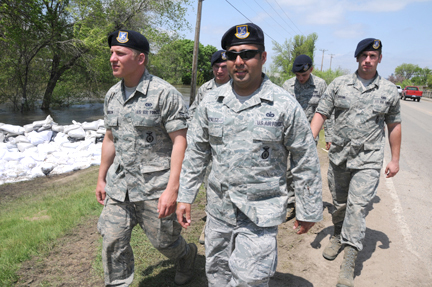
Guard provides presence patrols in Minot's evacuated areas

Master Sgt. Frank Gonzalez leads a team on a presence patrol mission June 2, 2011, throughout a low-lying area of Minot, N.D. To his left is Airman 1st Class Cody Jenson and, to the right, Airman 1st Class Alex Sprunk. North Dakota Guardsmen are spread throughout the evacuated areas of Minot in two- to six-person teams to guard against theft or vandalism since homeowners evacuated due to the flooding Souris River. Sergeant Gonzalez is assigned to the North Dakota Air National Guard's 219th Security Forces Squadron.